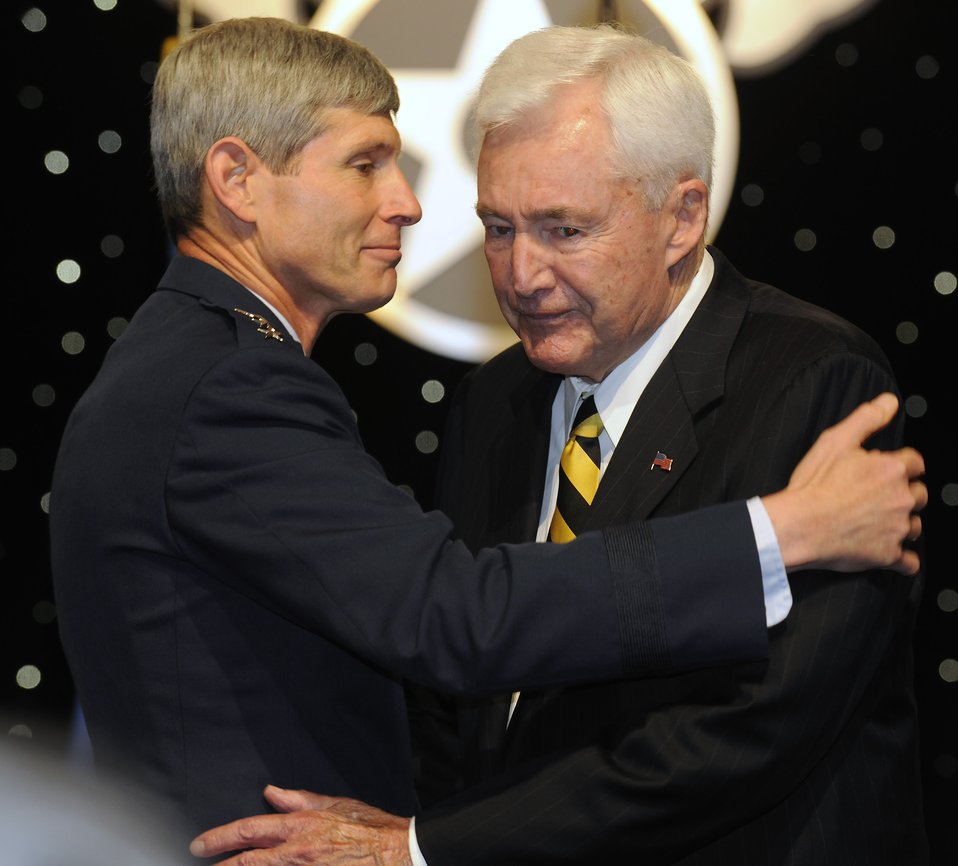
AFA

Air Force Chief of Staff Gen. Norton Schwartz congratulates former 1st Lt. Dolphin Overton III today after presenting him the Distinguished Service Cross during the Air Force Association Air and Space Conference and Technology Exposition Sept. 15, 2009, at Oxon Hill, Md. Lieutenant Overton received the medal after the Military Board of Corrections validated his actions of heroism while serving in South Korea in 1952.